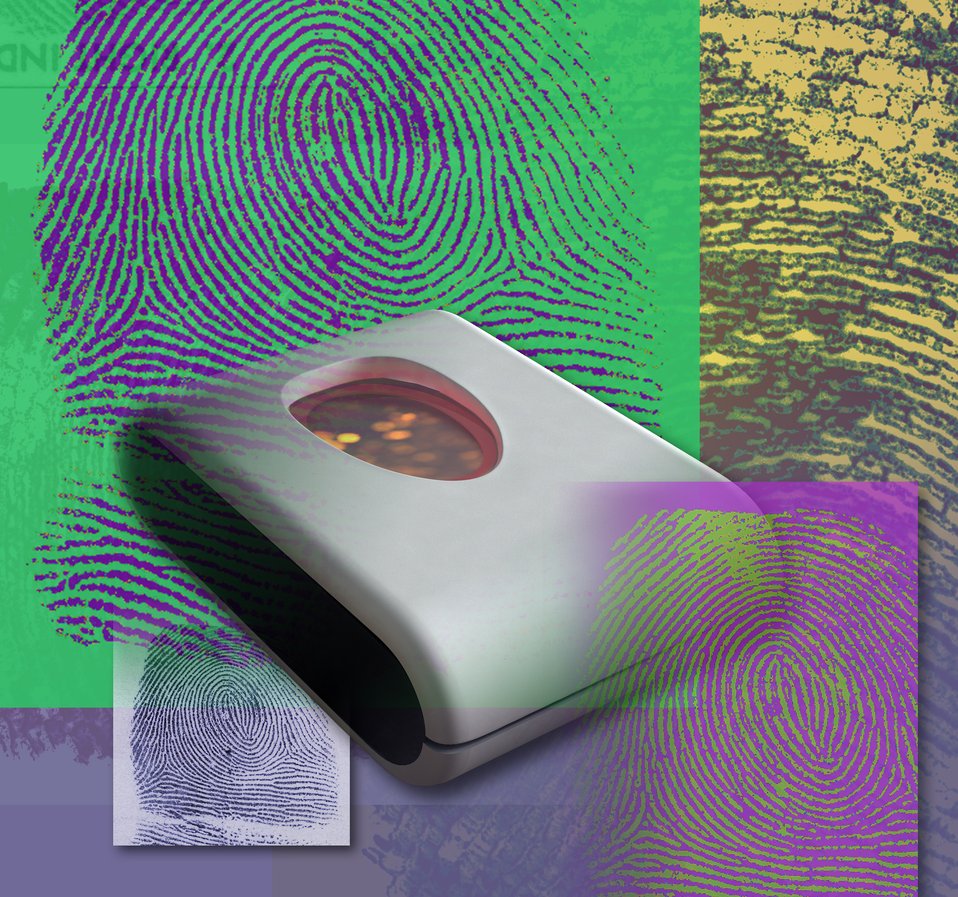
Fingerprint Identification Technology

Tests show that wireless data transmission from a fingerprint reader to a match-on-card can be secure.